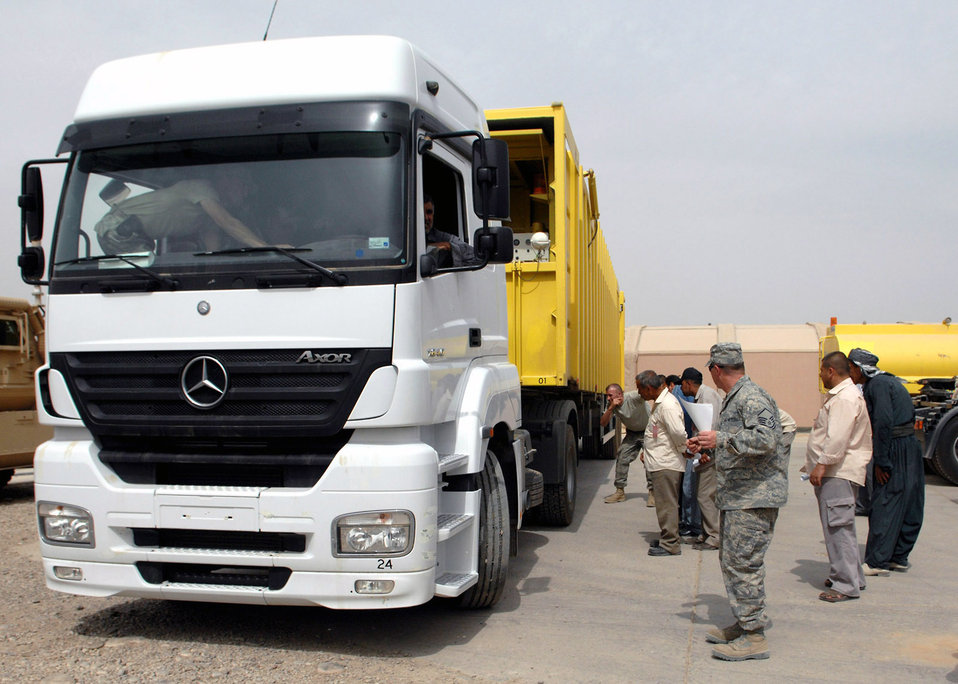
Airmen, reconstruction team improve Iraqi living conditions

An Iraqi takes the helm of a new truck purchased by coalition forces to help improve waste management practices April 16 at Kirkuk Air Base, Iraq. Members of the 506th Expeditionary Logistics Readiness Squadron Vehicle Management Flight trained 11 Iraqi's on proper maintenance techniques for thse newly acquired vehicles.